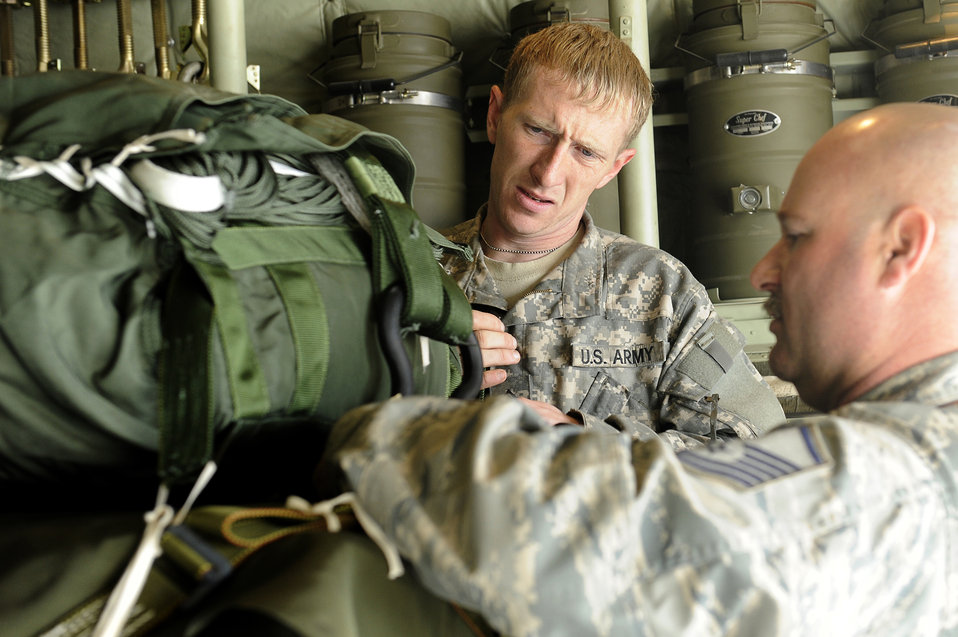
C-130J delivers supplies over Afghanistan

U.S. Army Sgt. Matthew Davenport, Combined Special Operations, and Air Force Master Sgt. Chuck Watkins, 774th Expeditionary Airlift Squadron, checks the parachutes on cargo loaded into a C-130J Super Hercules at Bagram Airfield, Afghanistan, March 2, 2010. Sergeant Davenport is deployed from Fort Bragg, N.C., and is from Mt. Olive, N.C. Sergeant Watkins is deployed from Channel Islands Air National Guard Base, Calif.